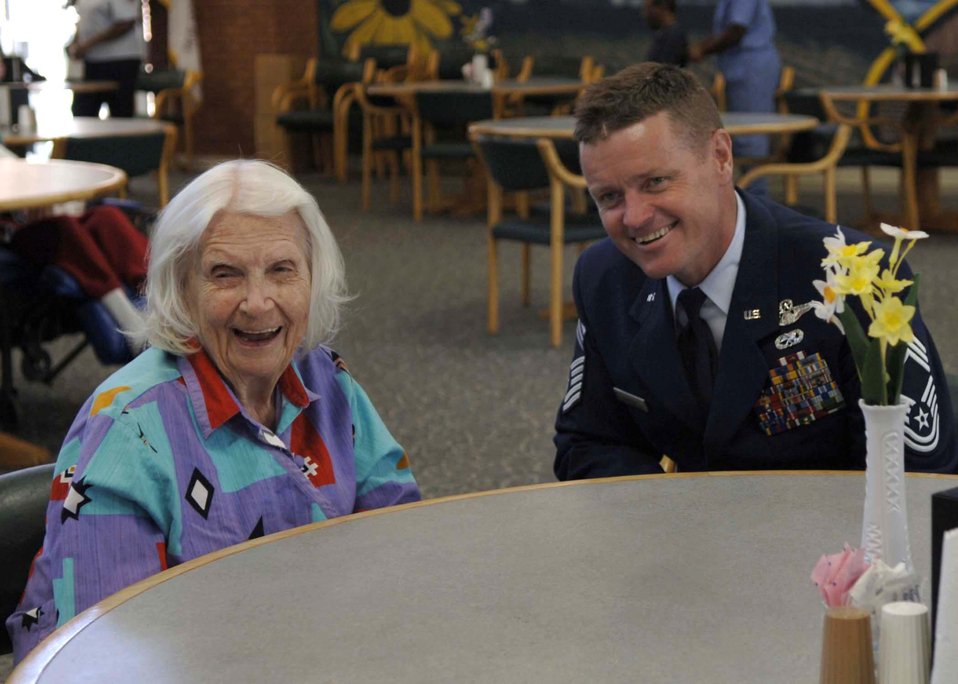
Airmen visit, share stories with veterans

Barbara Poole Shoemaker and Chief Master Sgt. Anthony Manson share stories about her flying days in the Women's Auxiliary Ferrying Squadron in 1942. She was also a member of the Women Airforce Service Pilots. Airmen from Andrews Air Force Base, Md., visited veterans at Charlotte Hall Veterans Home in Charlotte Hall, Md., Sept. 18. Chief Manson is the 316th Operations Group superintendent at Andrews.